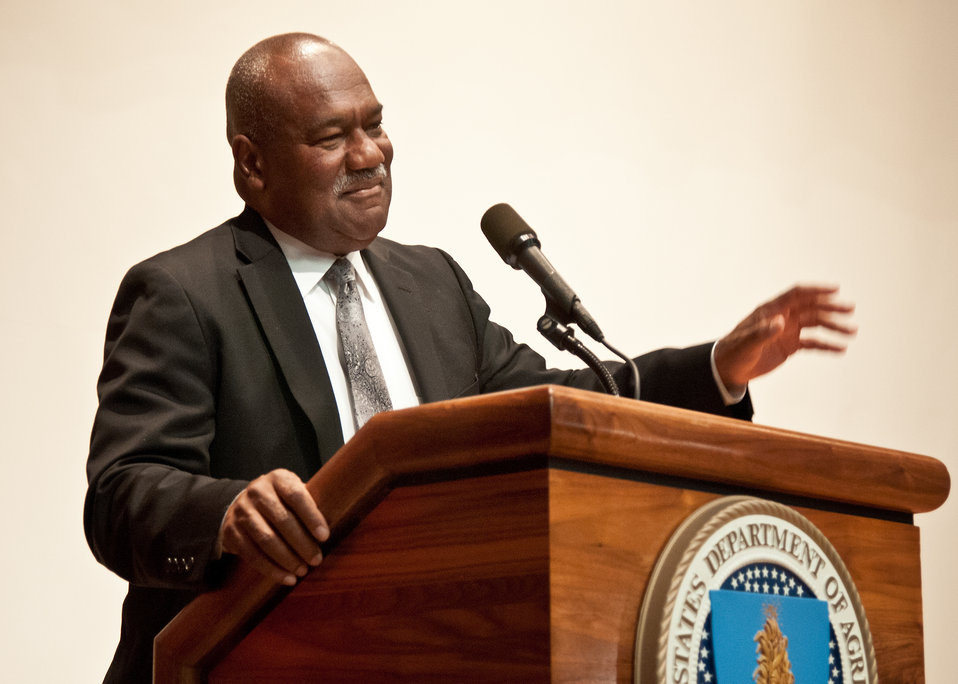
Pearlie Reed, Assistant Secretary for Administration received the 2012 Black History Month Leadership Award at the United States Department of Agriculture Black History Month celebration “Black Women in American Culture and History” at the U.S. Department of Agriculture in Washington, D.C. on Thursday, February 16, 2012.